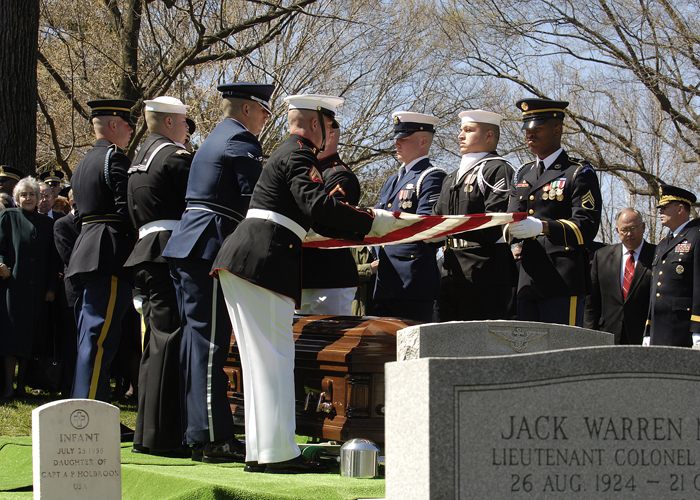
Weinberger tribute

A Joint Service ceremonial guard team performs a flag detail during the furneral for former Secretary of Defense, Caspar Weinberger, at Arlington National Cemetery, Arlington, Va., April 4, 2006. Secetary Donald H. Rumsfeld delivered remarks during the memorial service.